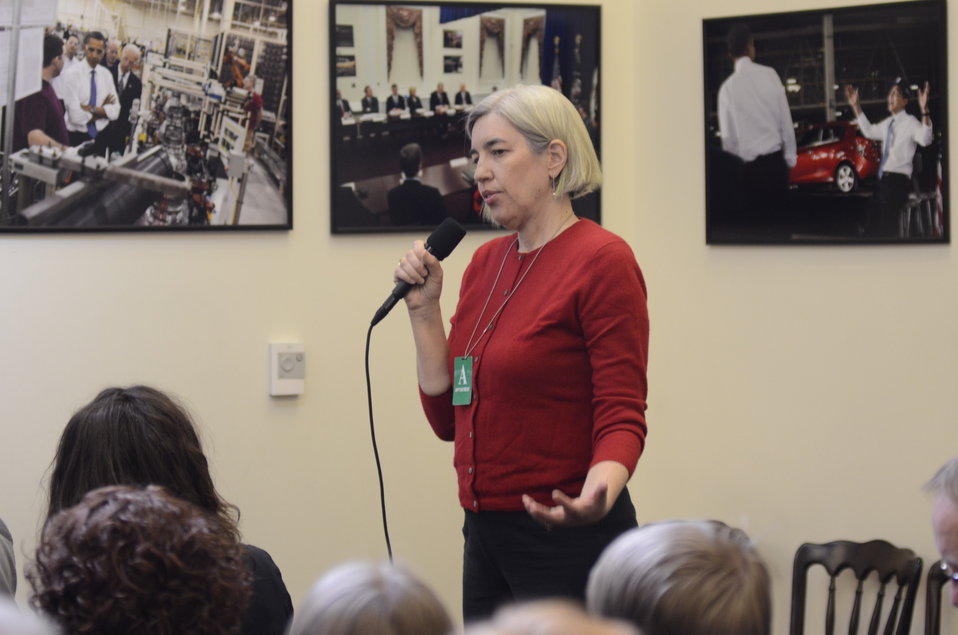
Sunnyside Farm owner Dru Peters, from Dover, PA., talked to Agriculture Deputy Secretary Kathleen Merrigan, White House Personal Chef and Food Policy Advisor Sam Kass and White House Office of Public Engagement Director Jon Carson, about raising pasture raised poultry and grass fed beef for local direct to market retail, during a Know Your Farmer Compass event that used twitter social media to continue National Conversation on Local and Regional Food projects and how they offer economic opportunities to local farmers, ranchers and food entrepreneur, and took place at the White House, and Twitter was used to expand the conversation worldwide, from Washington, D.C., on Monday, March 5, 2012. Using the new web-based Know Your Food Compass, the conversation covered many aspects about food, such as infrastructure, stewardship, local meat and poultry, Healthy food access, careers in agriculture and local food knowledge. Unlike most events where mobile communication devices are asked to be turned off, here it was asked that they remain on allowing people to have social media conversations.